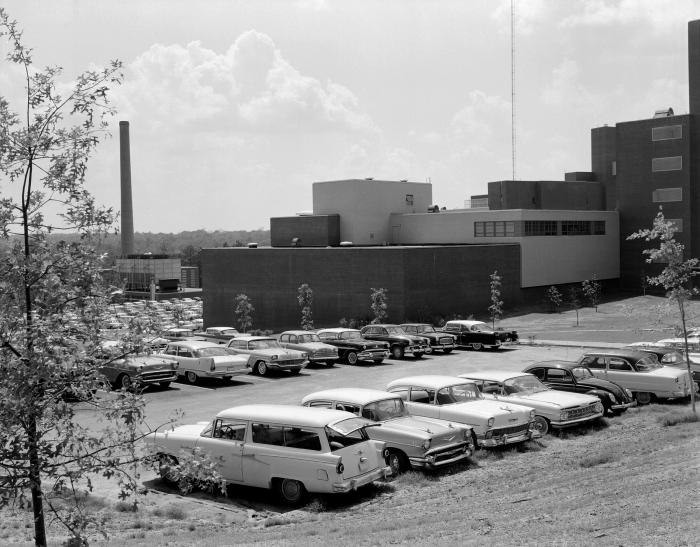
Looking westward, this historic 1960 view, depicts what was the east wing of the Centers for Disease Control and Prevention (CDC), highlighting the former home for the organization's Multimedia/Television Broadcast facilities, Building 3, located on Clifton Road, in Atlanta, Georgia.